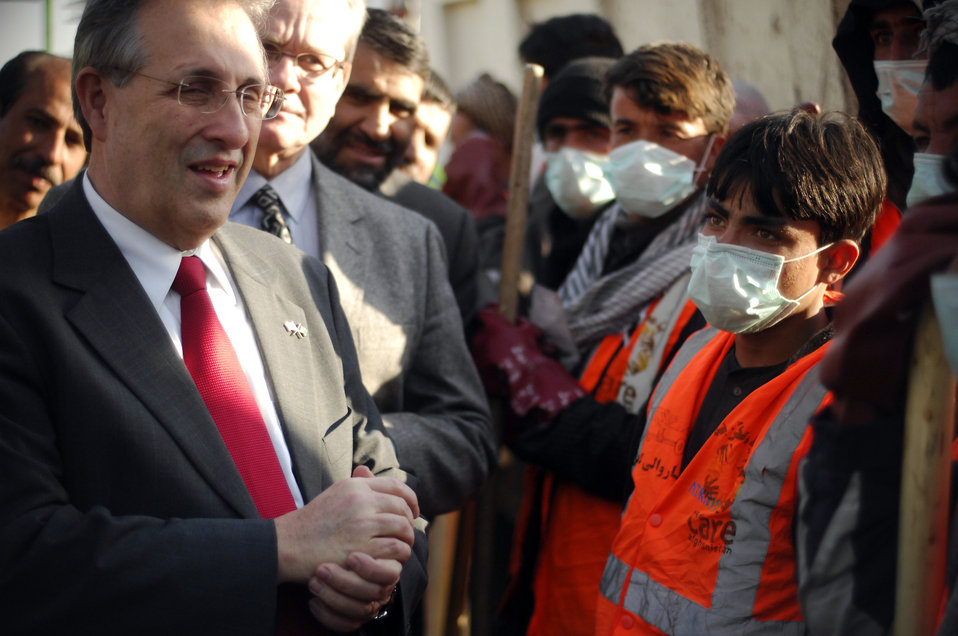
Care04